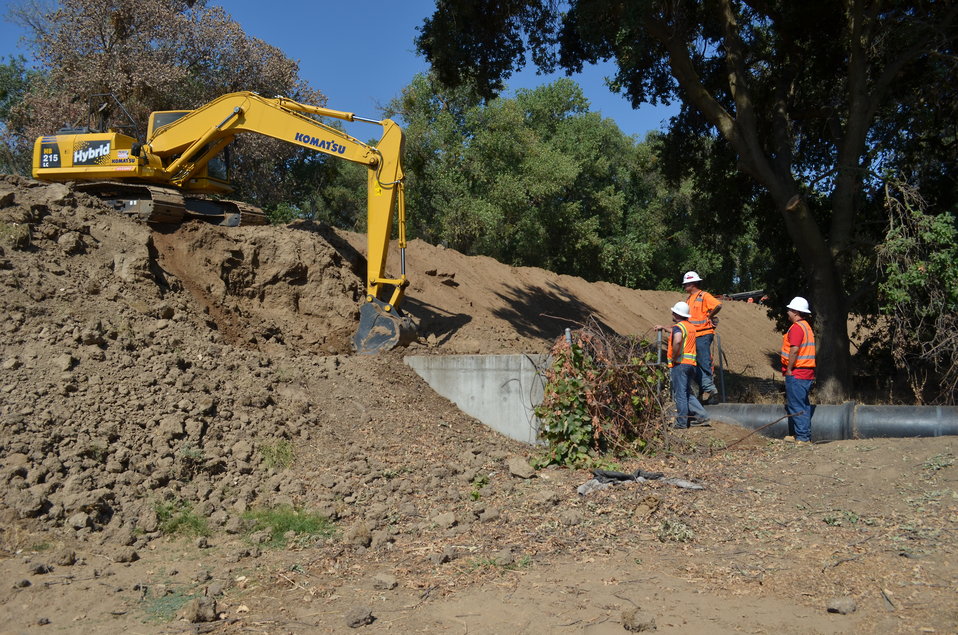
Inactive sewer line obstructing north Sacramento levee work

Construction crews for the U.S. Army Corps of Engineers Sacramento District oversee levee work Aug. 21, 2013 along the north bank of the American River in north Sacramento, Calif. Complicating the work are land easement rights, an inactive railroad line and an assortment of buried utilities, such as the sewer line shown, that obstructed the Corps’ work near here more than a decade ago.